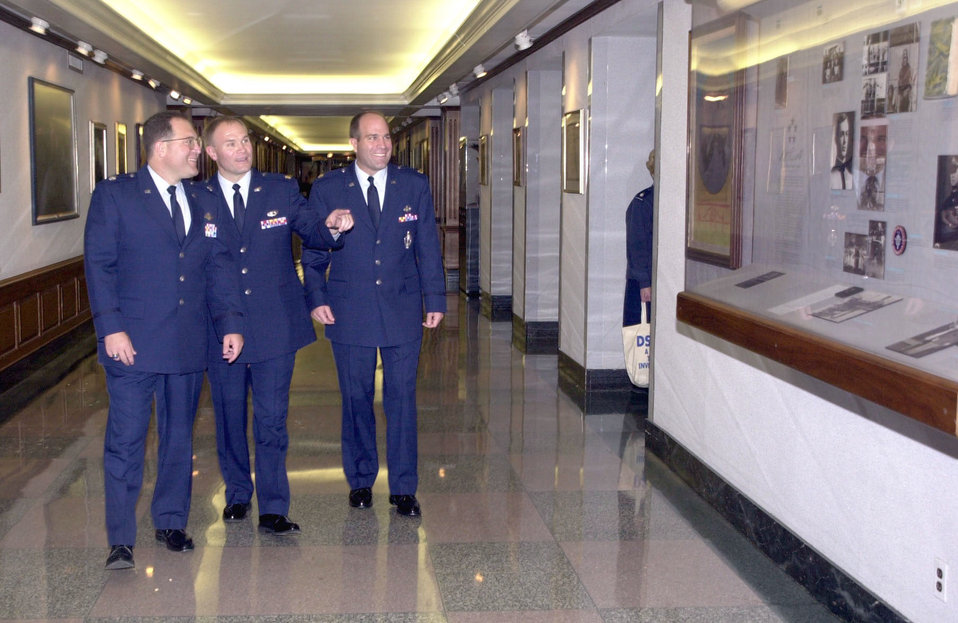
Three Brothers

WASHINGTON --Lt. Col. Ken, and Majs. Karl and Kevin Rozelsky, meet at the Pentagon to be pinned-on by the Air Force chief of staff Sept. 29, 2000. The brothers -- all Air Force Academy graduates -- followed different career paths, but have opted to make the Air Force a career.